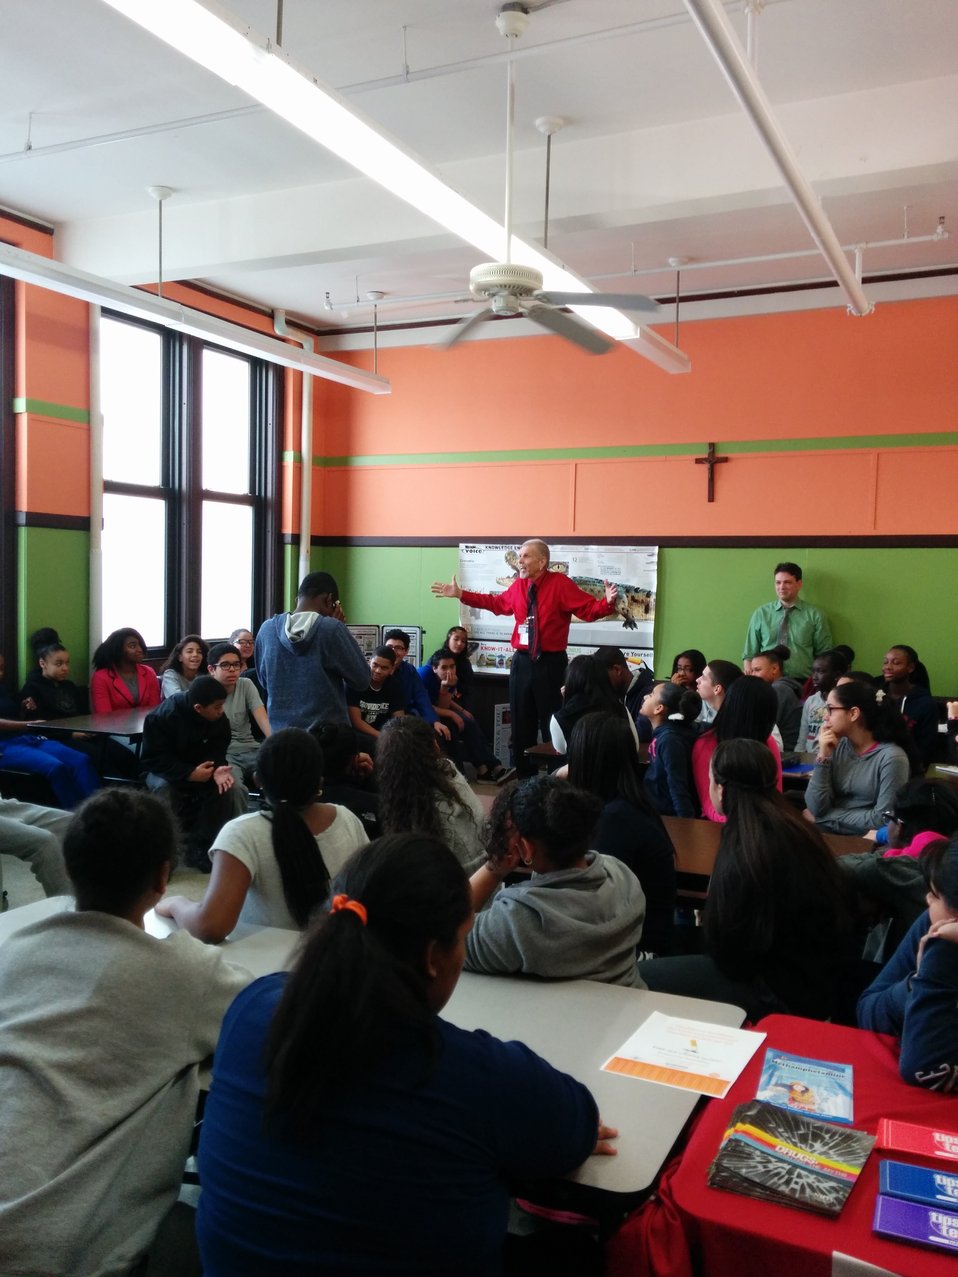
Shattering the Myths during NDFW in Rhode Island

100 students participated in the Substance Abuse Prevention Presentations at Highlander Charter School (HCS) and Bishop McVinney Middle School (BMMS) on January 31st, 2014 during National Drug Facts Week.